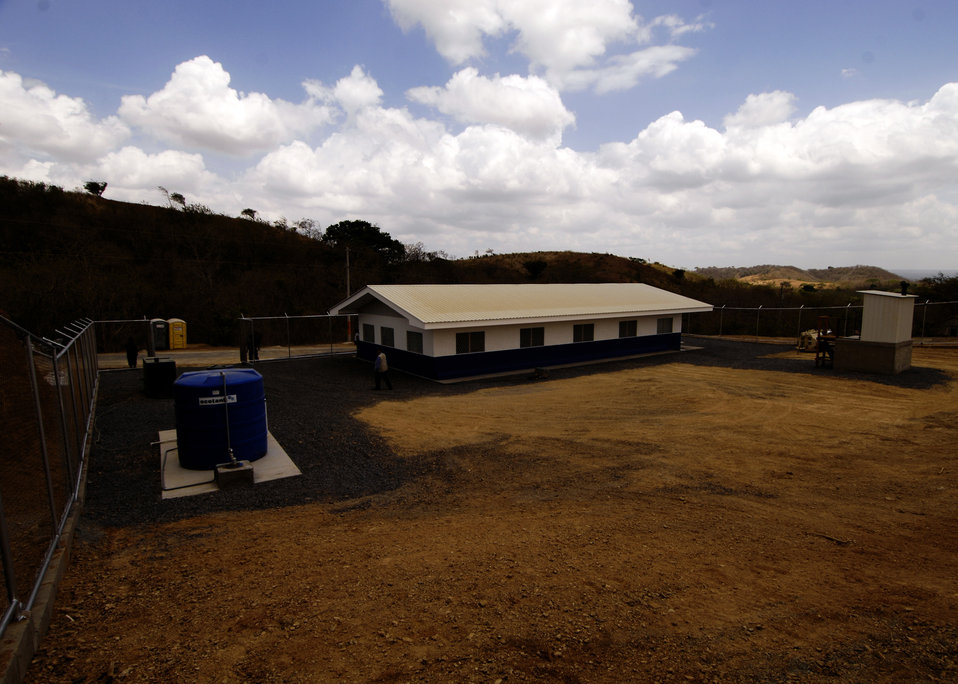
New Horizons Nicaragua 2007 closes out with ceremony

A five-room medical clinic now stands in Buena Vista thanks to New Horizons - Nicaragua 2007, which is a $7.5 million joint humanitarian and training exercise. More than 250 Airmen, Soldiers and Marines built a three-room school and a five-room medical clinic and treated more than 20,000 Nicaraguan medical patients.